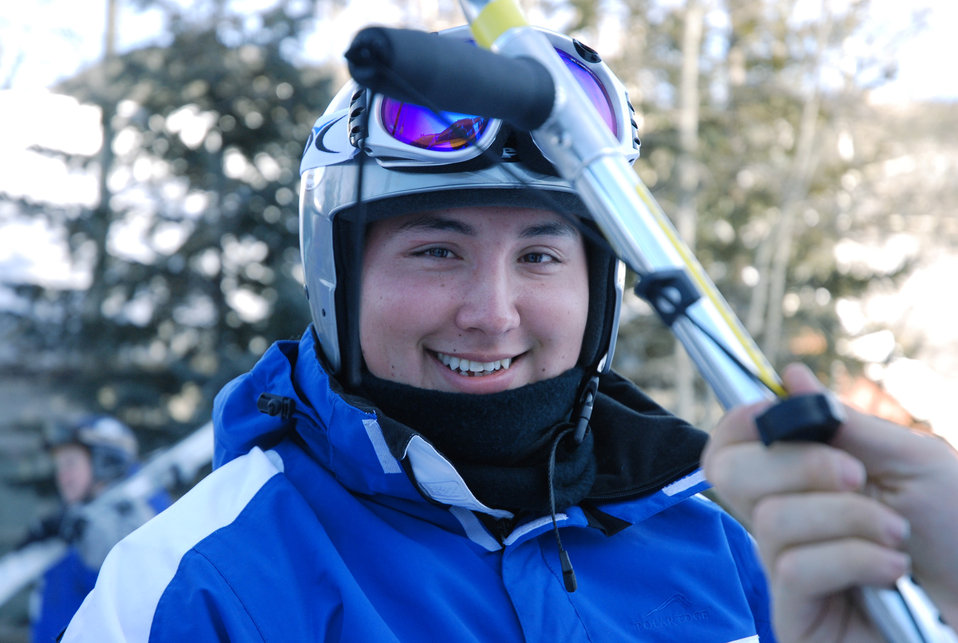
Injured Airman overcomes disabilities on slopes

Airman 1st Class Kevin Krogh shows off his spirit before tackling the Haywood slope at Keystone Resort, Colo., Jan. 26. Airman Krogh, together with several other disabled servicemembers, took advantage of free ski lessons offered during the annual SnoFest military community event. Airman Krogh, who was injured during an automobile accident, is an F-22 Raptor weapons loaders assigned to Langley Air Force Base, Va.